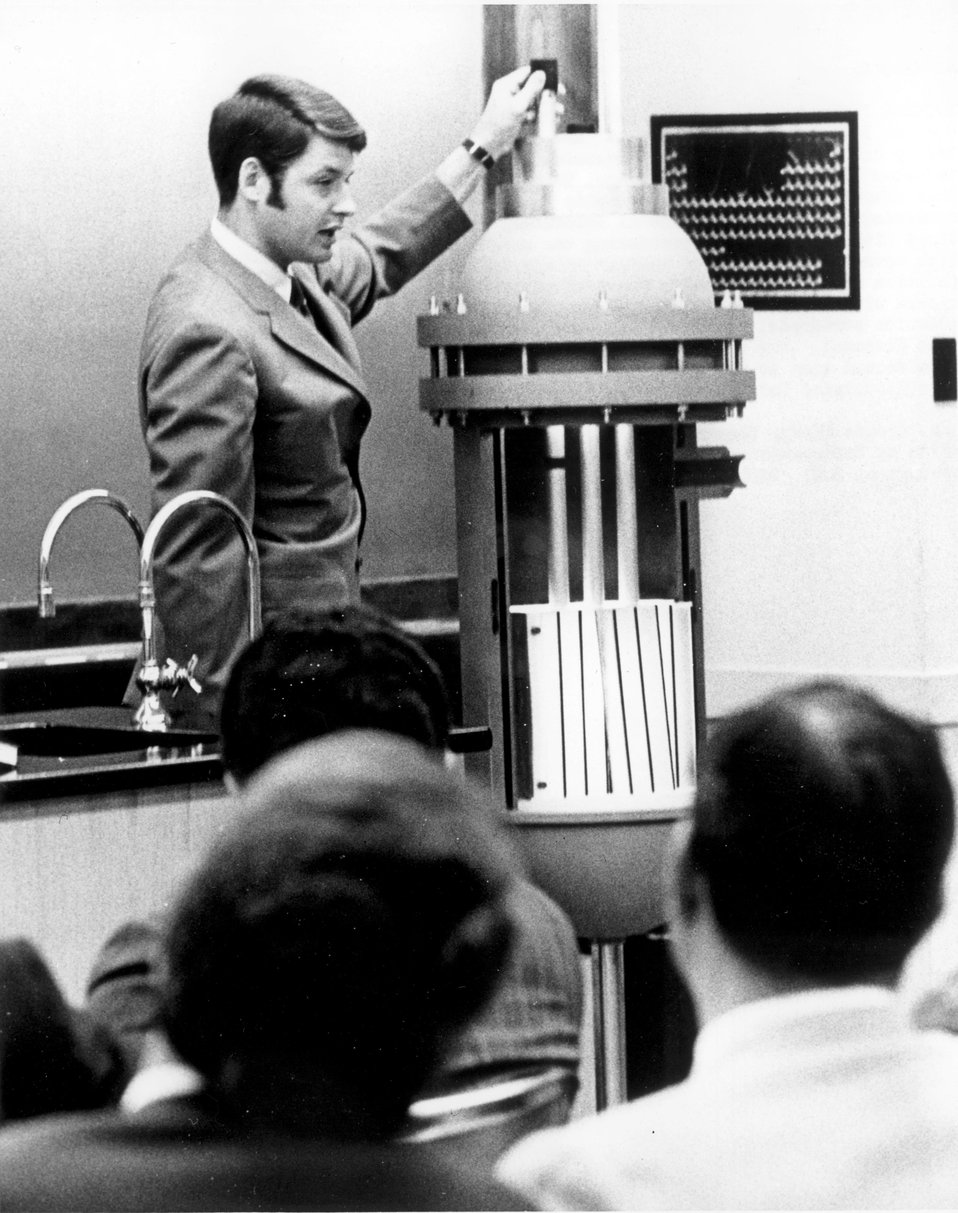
'NUCLEAR POWER AND THE ENVIRONMENT'...A workshop on 'Nuclear Power and the Environment' for electric utility and nuclear industry representatives was conducted in May, 1971 in Oak Ridge, Tenn., by Oak Ridge Associated Universities. c. 1972